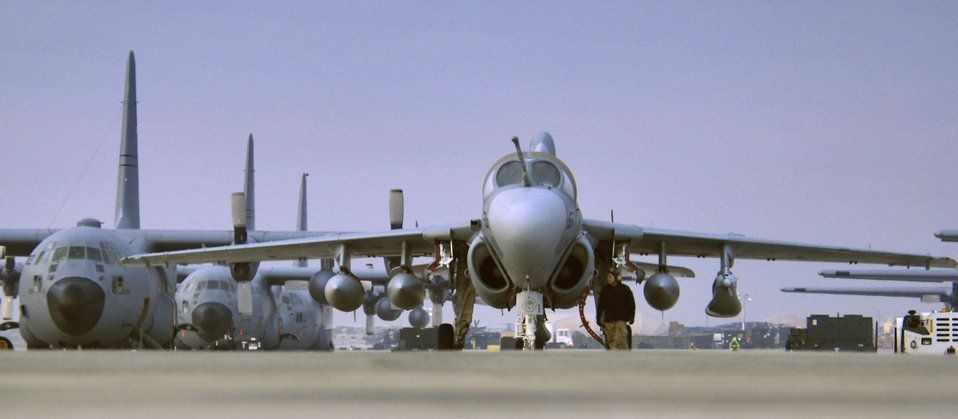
Sunrise sortie

EA-6B Prowler from Naval Air Station Whidbey Island, Wash., waits to launch Wednesday, March 8, 2006 for a dawn sortie from its deployed location at Bagram Air Base, Afghanistan. The squadron's mission is to dominate the enemy's electromagnetic spectrum through precise, lethal application of electronic attack.